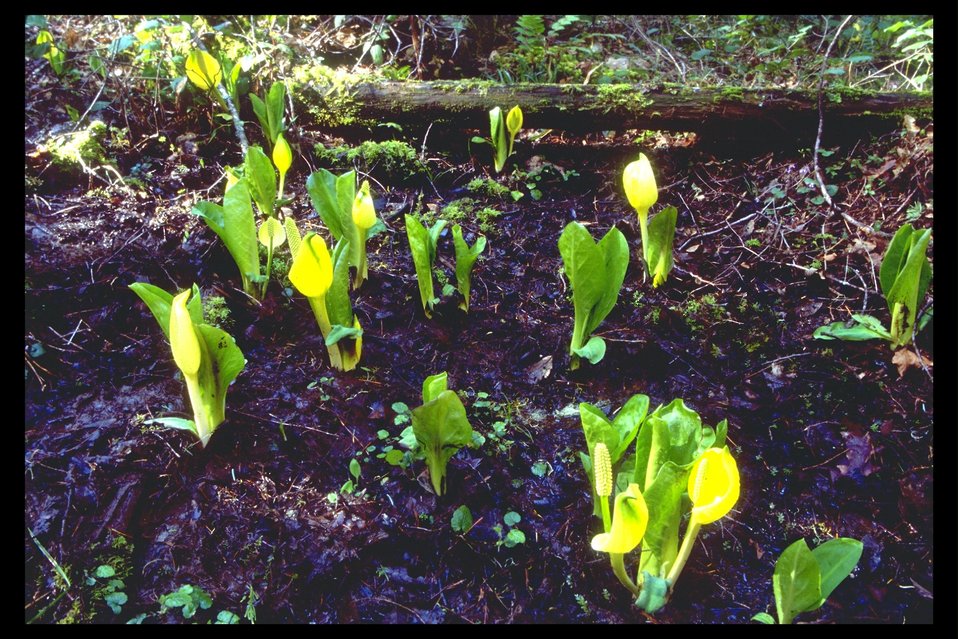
Yellow Skunk Cabbage (Lysichitum americanum) found at Three Horn Campground along Tiller Highway.